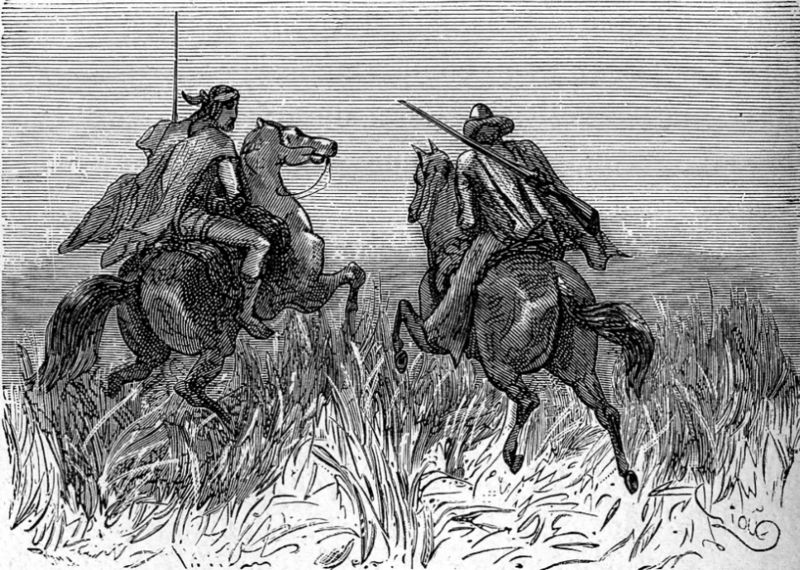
An ilustration from the novel 'In Search of the Castaways; or Captain Grant's Children' by Jules Verne drawn by Édouard Riou. Polski: Ilustracja powieści Juliusza Verne'a 'Dzieci kapitana Granta' autorstwa Édouarda Riou. Français : 'Les Enfants du capitaine Grant', Édouard Riou.